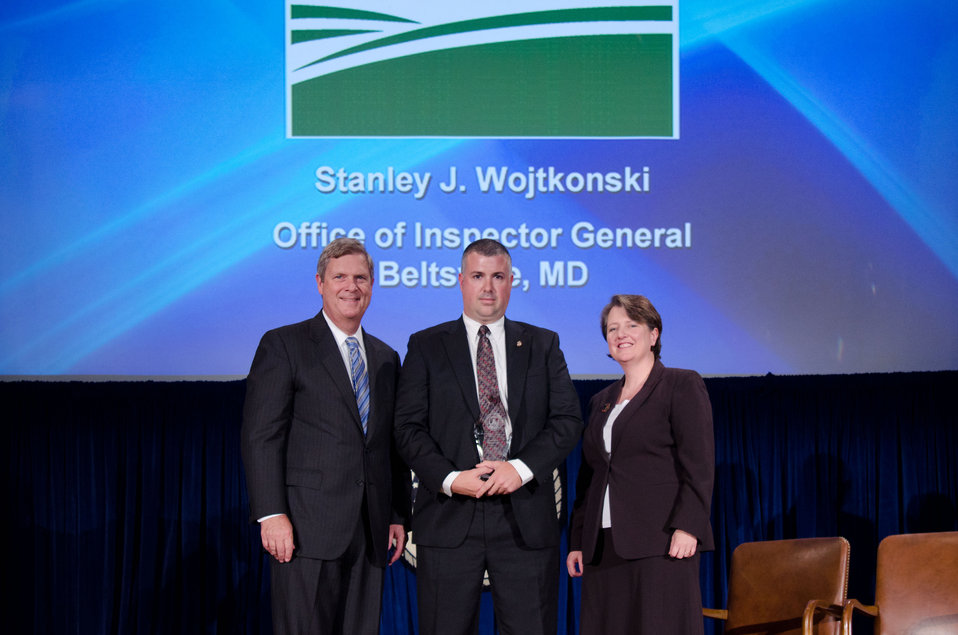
Agriculture Secretary Tom Vilsack (l) and Deputy Secretary Kathleen Merrigan (r), presents the Award for Personal and Professional Excellence to Stanely J. Wojtkonski, Office of Inspector General, Beltsville, MD. For exceptional investigative skills resulting in a conviction and case resolution within 86 days, which is well under the timeliness standard. On Wednesday, September 14, 2011 in the Jefferson Auditorium at the US Department of Agriculture in Washington, DC.